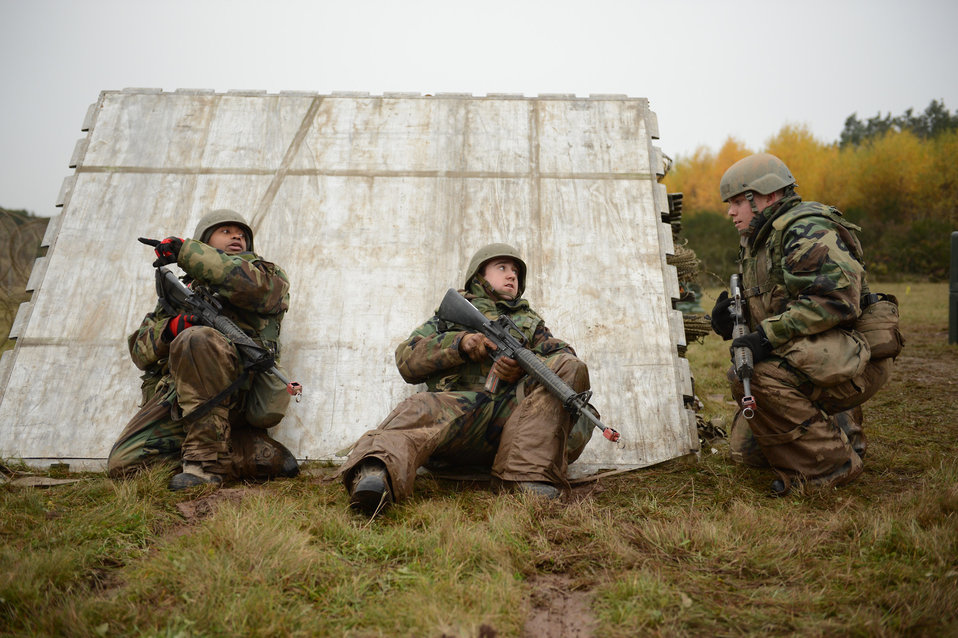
Perimeter watch

Airmen from the 606th Air Control Squadron try to pinpoint the source of gunfire outside the perimeter of their base during combat readiness training at Spangdahlem Air Base, Germany, Nov. 15, 2012. The training tested the Airmen’s ability to defend their base through use of force, cultural awareness, indirect fire and unexploded ordnance scenarios.